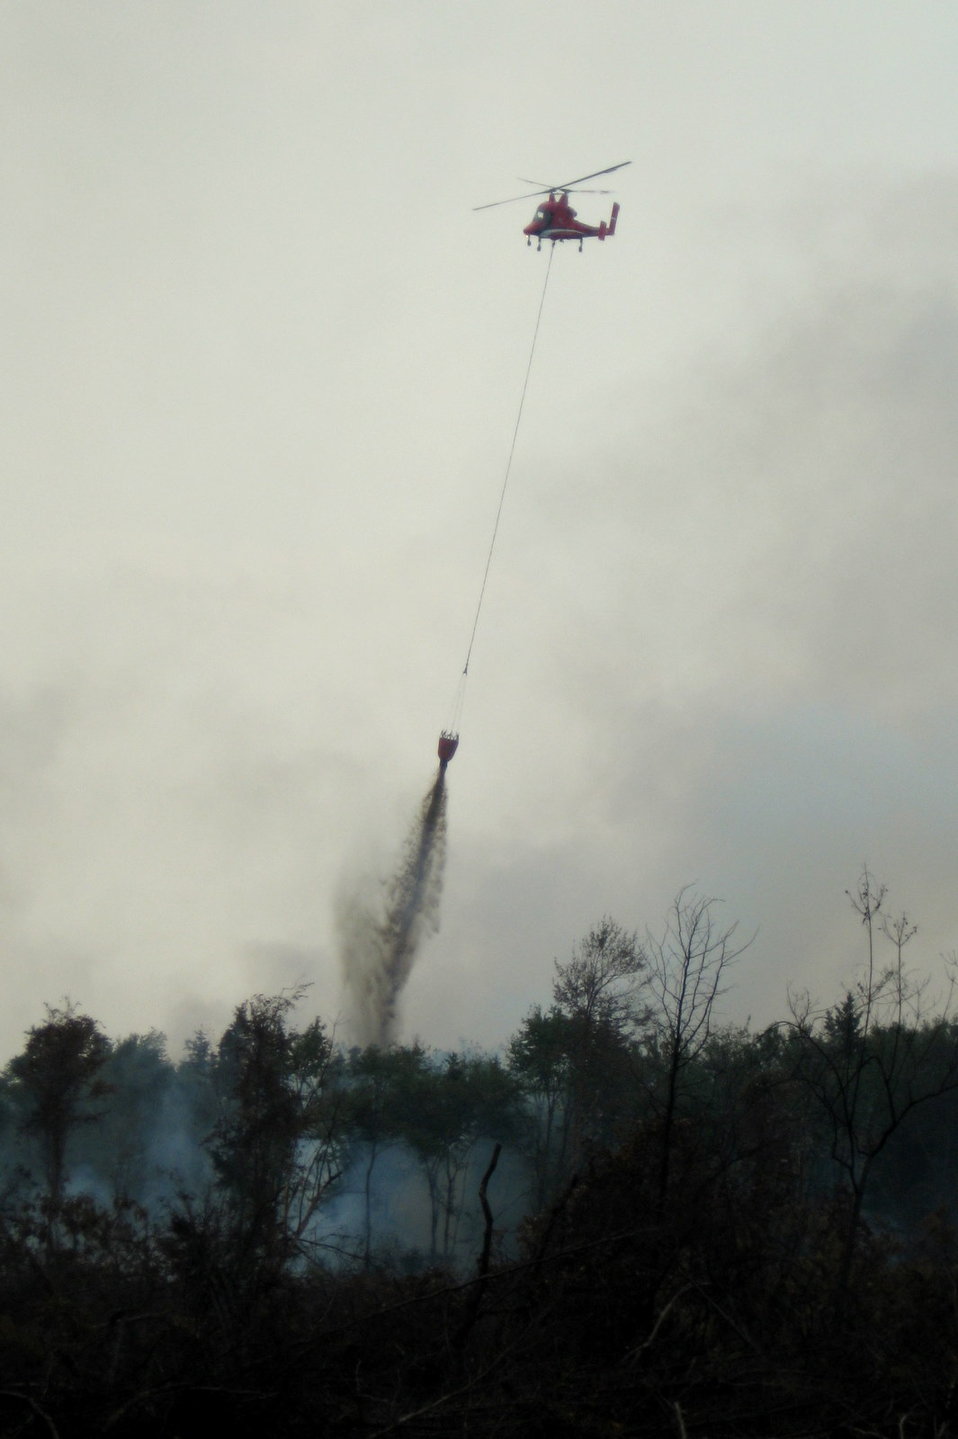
Cooling south of Corapeake Ditch

Suffolk, VA, August 2011: A helicopter drops about 700 gallons of water on a hot spot near Corapeake Ditch at the Lateral West Fire burning in Great Dismal Swamp.